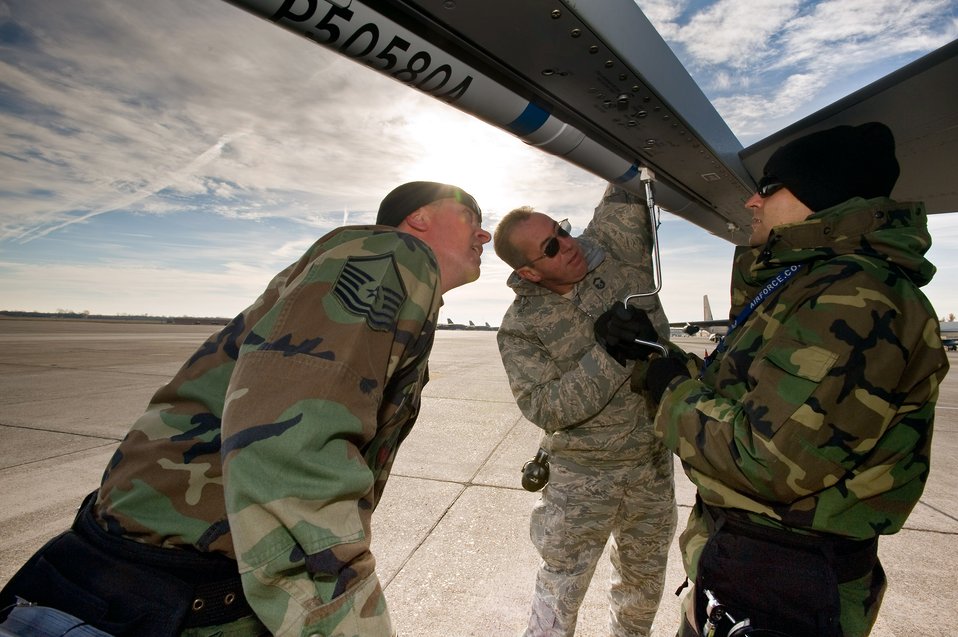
Swap out

Staff Sgt. Richard Martinez tightens a mount that holds an air combat maneuvering instrumentation pod to the wing of an F-16 Fighting Falcon as Senior Master Sgt. Mark Jones and Master Sgt. Mark Caton observe and ensure it seats properly at Green Flag East at Barksdale Air Force Base, La. The Colorado Air National Guard members from Buckley AFB, Colo., are taking part in a predeployment exercise for Air Combat Command flying units. Sergeant Martinez is a 140th Aircraft Maintenance Squadron aircraft weapons specialist, Sergeant Jones is the 140th Maintenance Squadron weapons element NCO in charge, and Sergeant Caton is an aircraft armament specialist.